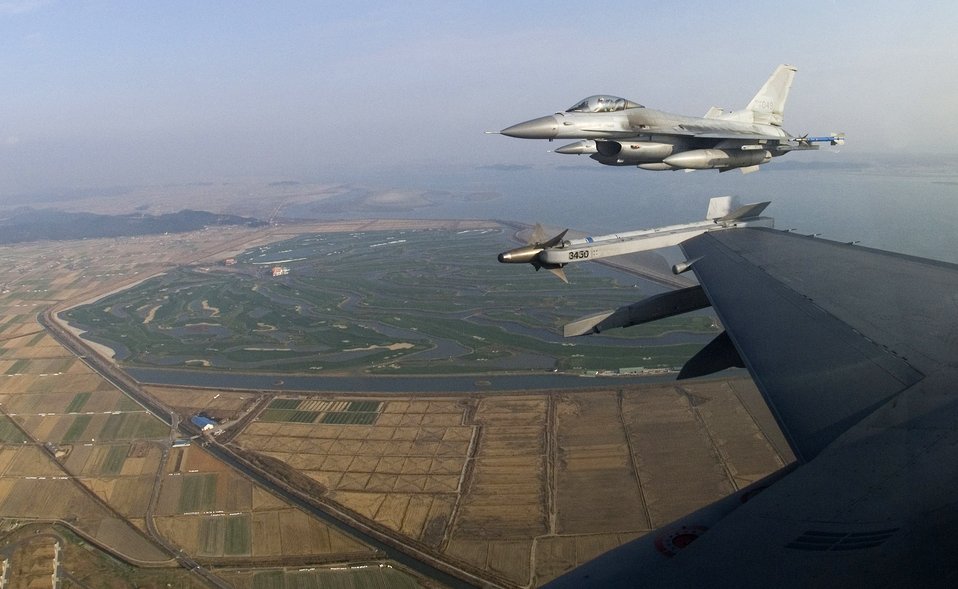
8th FW commander, ROKAF fly in training mission

Two F-16 Fighting Falcons from the Republic of Korea Air Force's 111th Fighter Squadron, form up on Kunsan jets after completing a joint-training mission with pilots from the 8th Fighter Wing here Nov. 14. ROKAF pilots joined with Kunsan pilots during the joint mission to give pilots from both countries a chance to work together and hone their warfighting skills.